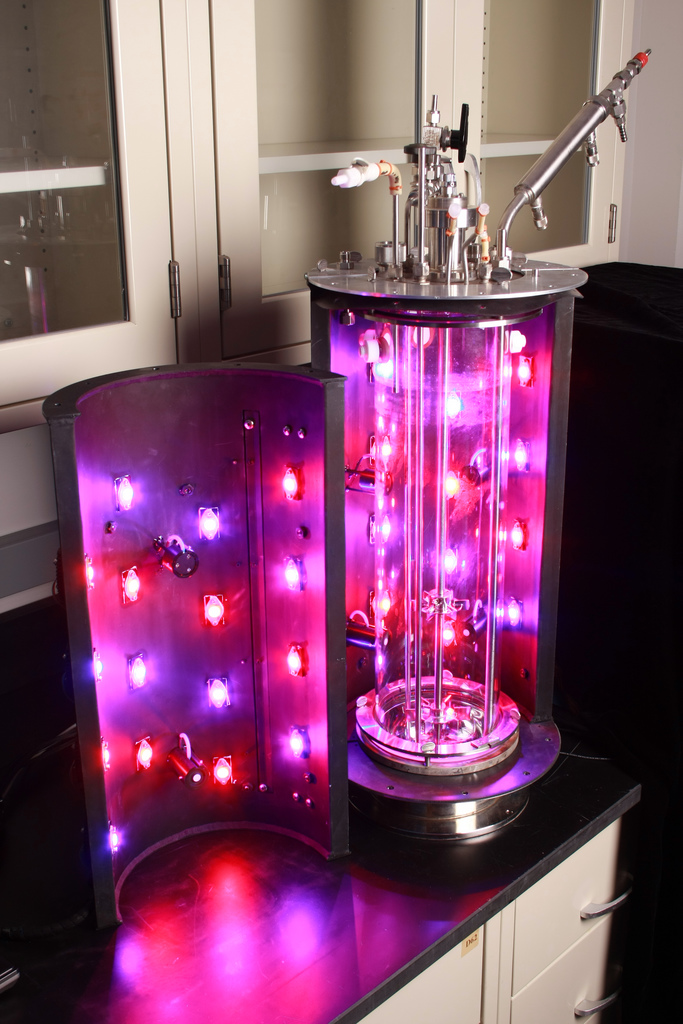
Multiprogram research/development site where science/engineering are applied to today's leading technical questions.

At Pacific Northwest National Laboratory, a novel cutting-edge custom light enclosure for photobioreactor blocks ambient light from entering a bioreactor while providing red and blue light using energy-efficient LEDs. This photobioreactor will be used to optimize hydrogen and biofuel production from photosynthetic microbes. Its large volume and continuous culture capability enables mass-production of biomass for biofuels and alternative fuel research.